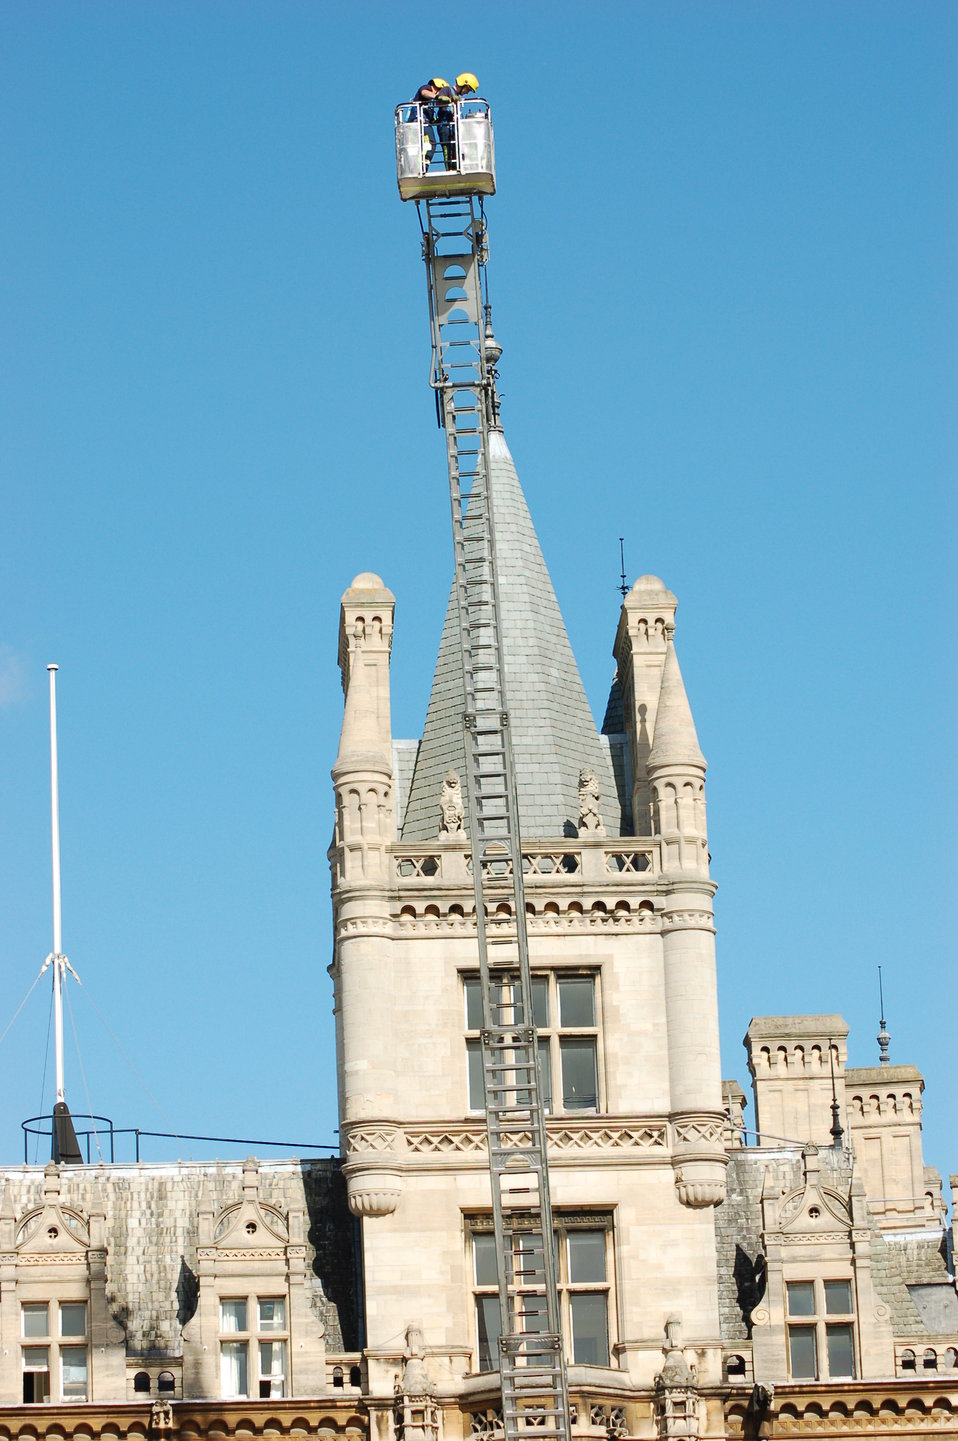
Cambridge-TL-basket-8